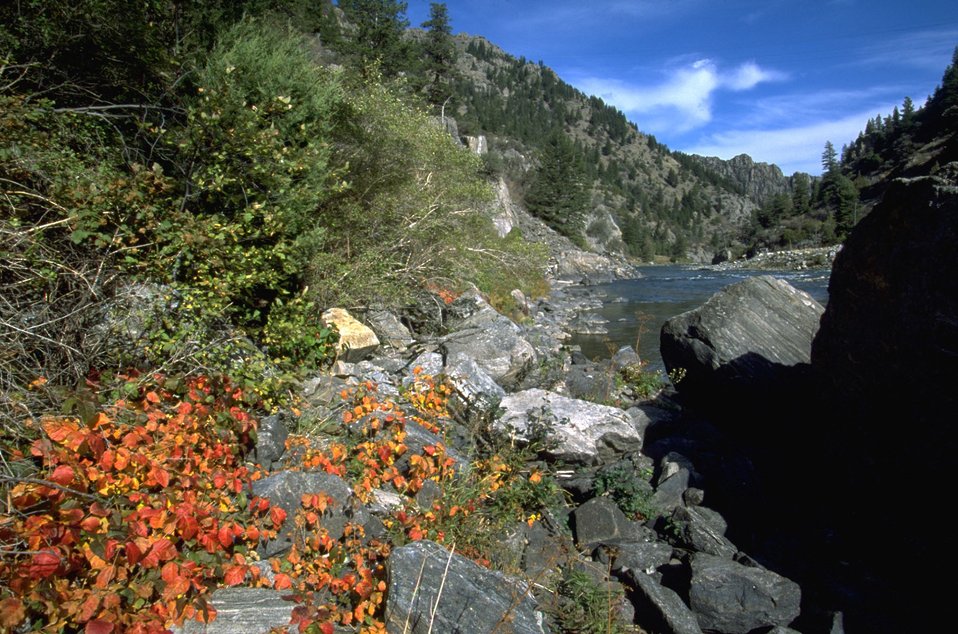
Poison Ivy next to Madison River